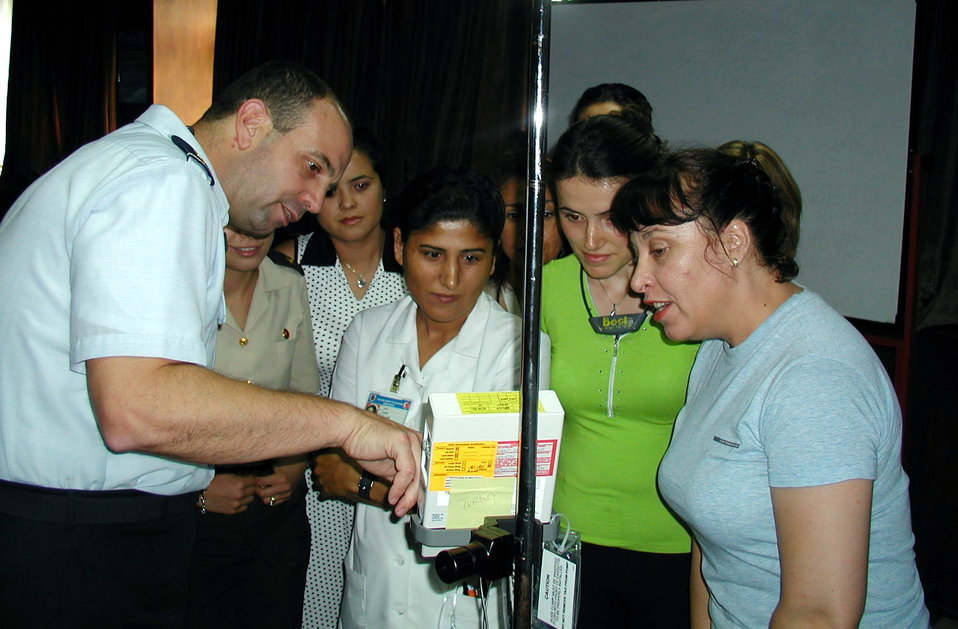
DIMO strengthening medical ties worldwide

ANKARA, Turkey -- Maj. (Dr.) Richard Conte trains Turkish medics on the portable IV pumps used during medical evacuation during a Defense Institute for Medical Operations aeromedical evacuation and critical-care transportation course given at the Gulhane Military Medical Academy here. Students included Turkish physicians, nurses and medical technicians.